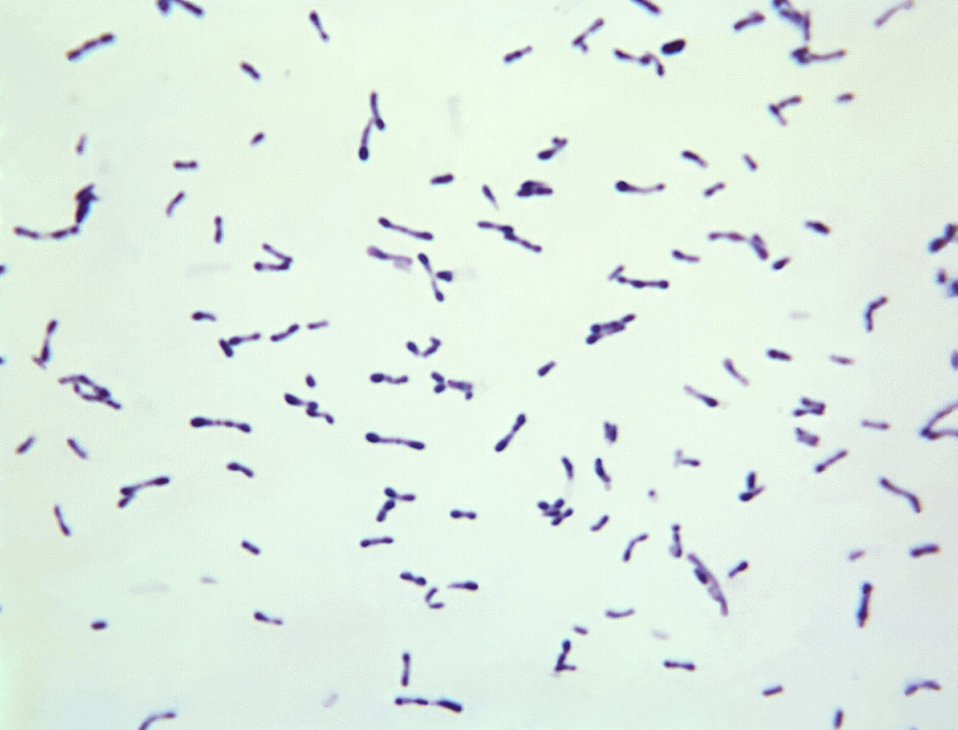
This photomicrograph depicts numerous Gram-positive asporogenous, rod-shaped, Corynebacterium diphtheriae bacteria.